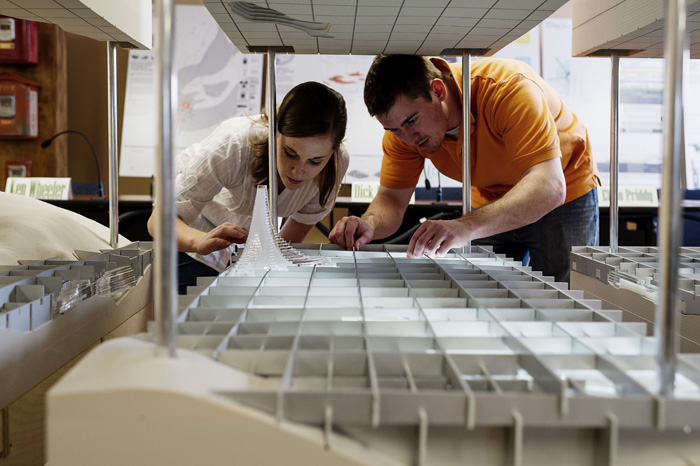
UK Students Imagine DOE’s Paducah Site As Future Technical-Industrial Hub

UK College of Design students Carolyn Parrish and Joe O'Toole helped to design scale models of the Paducah Site’s geographical features, subsurface conditions, and groundwater contamination. The upside-down cone represents the flow of contamination into a horseshoe-shaped groundwater plume.

Over the past year, University of Kentucky students have studied how to preserve, replace, or even build on the more than 3,000 direct and indirect jobs the site currently supports. Future success hinges on interrelated uses such as research and development, education, energy production, manufacturing, and recycling/reclamation, he said.